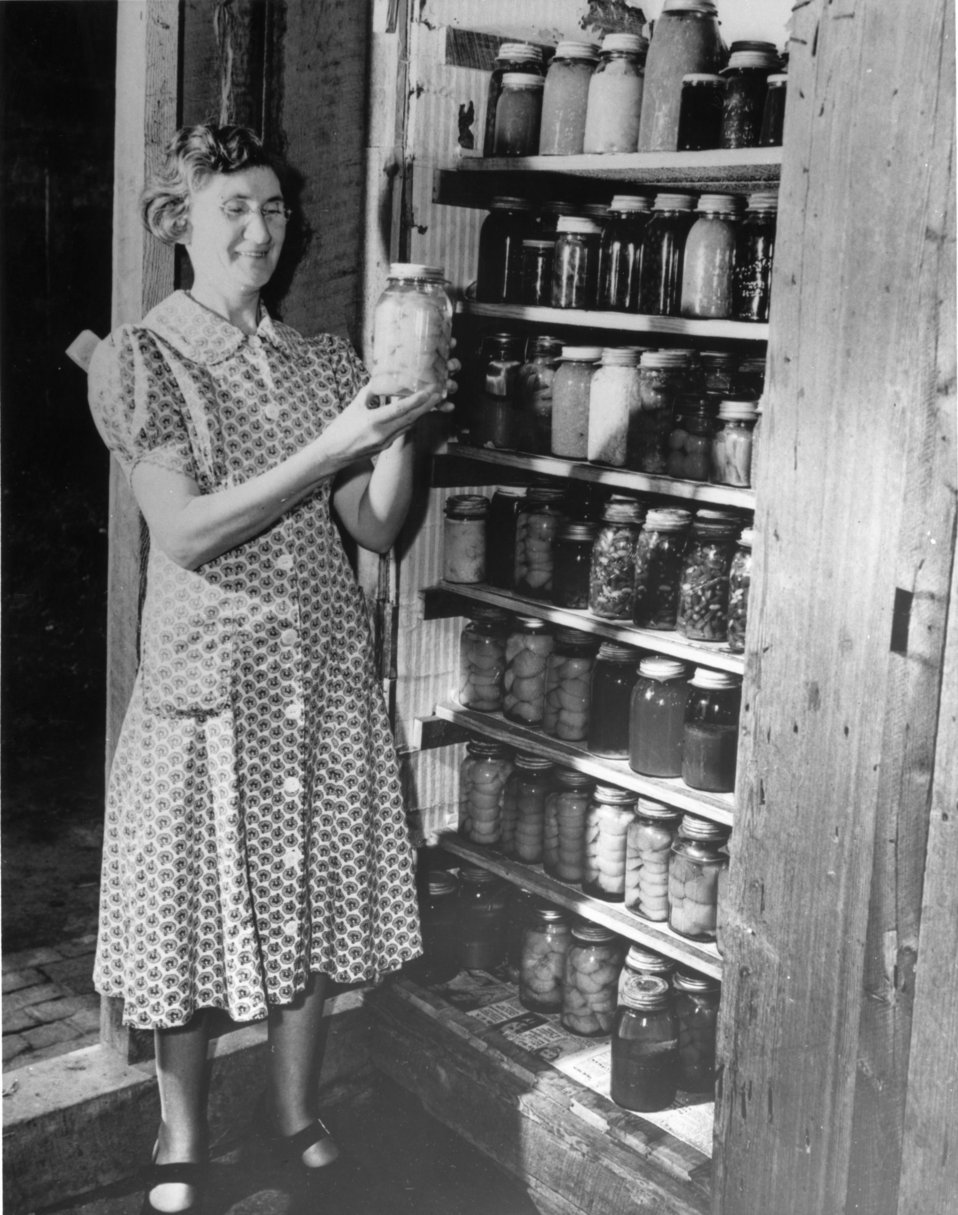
Early settlers at Oak Ridge